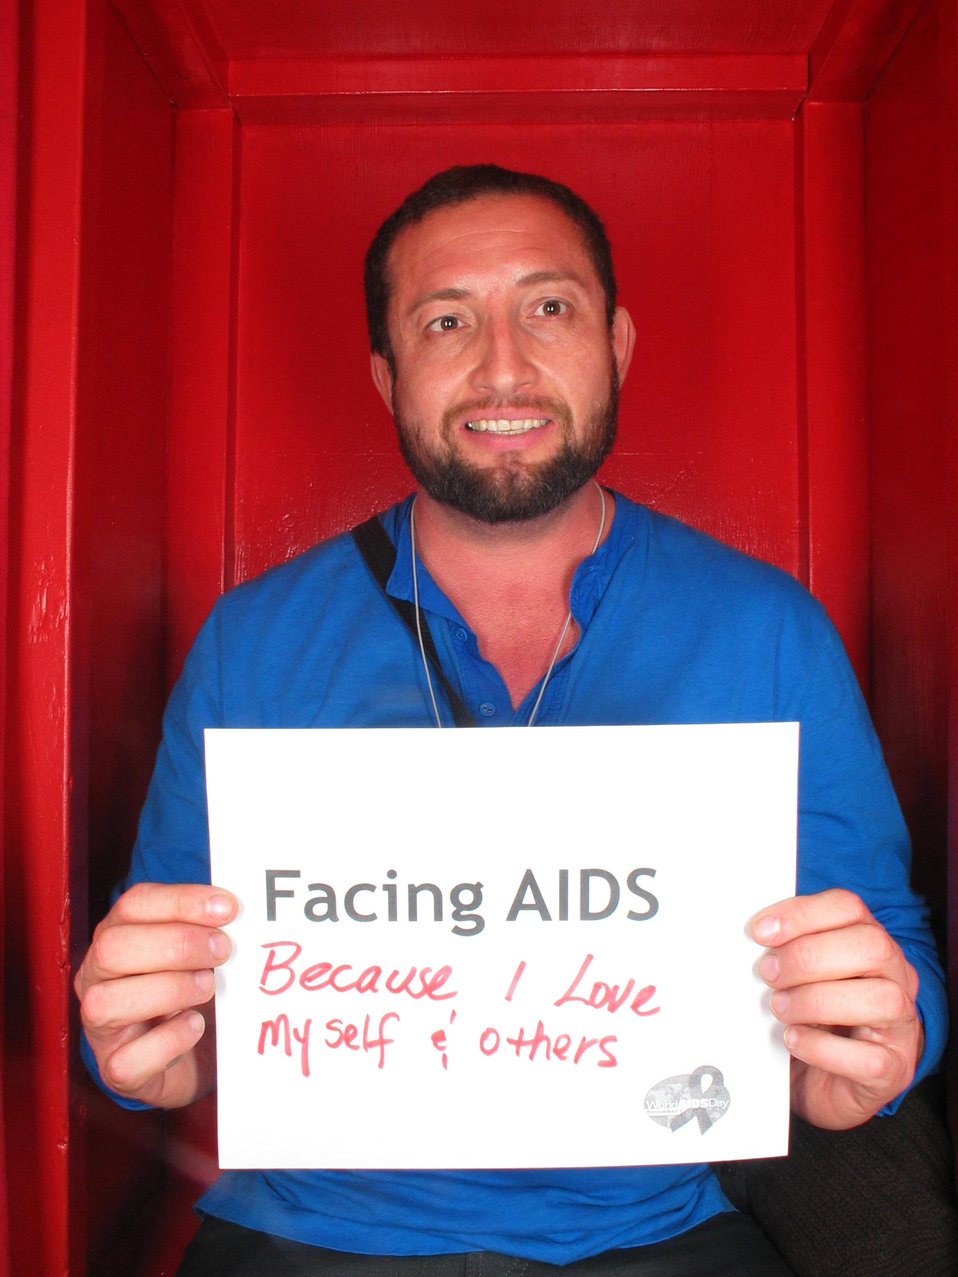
Facing AIDS because I love myself and others